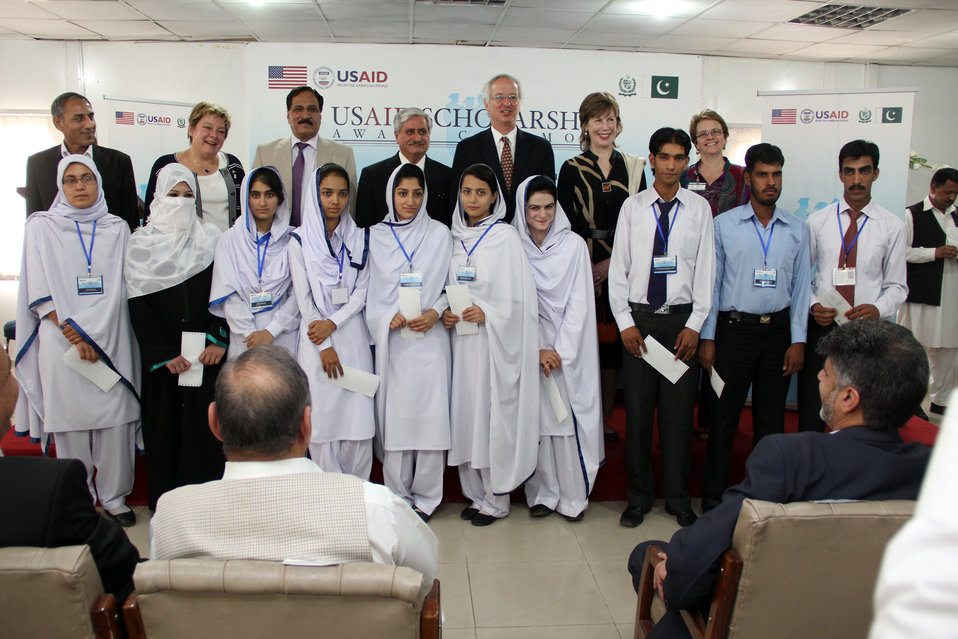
Scholarship distribution ceremony

Group photo of some scholarship recipients with (back row L-R): Dr. Jawad Ali - Provincial Director, USAID Teacher Education Project, Acting Mission Director USAID/Pakistan, Vice-Chancellor University AJ&K, President AJ&K, Mr. & Mrs. Ambassador, Sr. Technical Director USAID Teacher Education Project